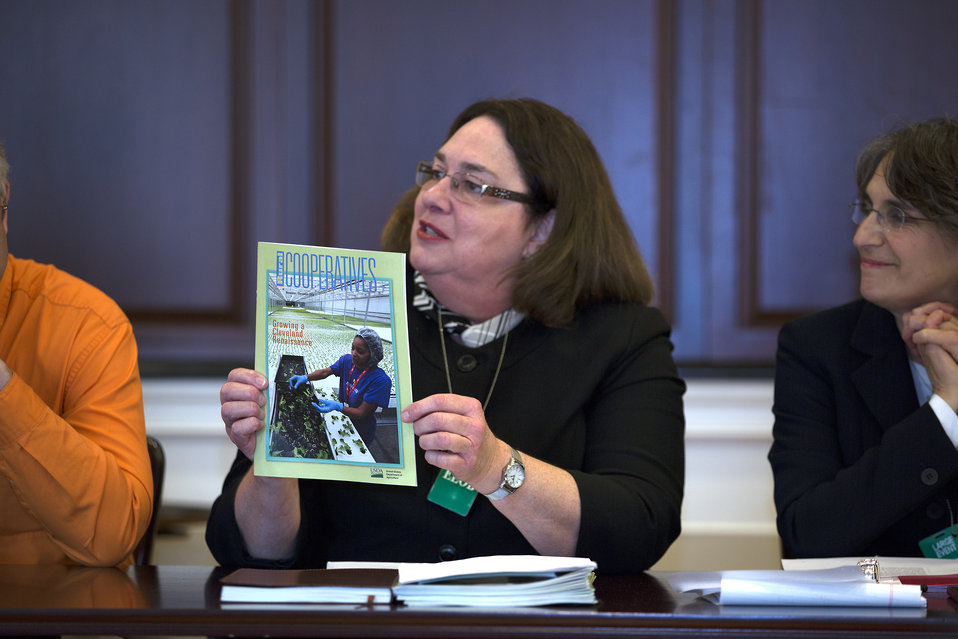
Cleveland Ohio’s Green City Growers Cooperative CEO Mary Donnell, holds up an issue of the U.S. Department of Agriculture's (USDA) Rural Cooperative Magazine featuring the Green City Growers Cooperative greenhouse project in downtown Cleveland, OH during the White House Rural Forum at the White House in Washington, DC on Tuesday, Feb. 4, 2014. The greenhouse, the largest food production greenhouse in a core urban are in the US, employs 25 people and produces over three million heads of lettuce annually which is distributed to the local community.